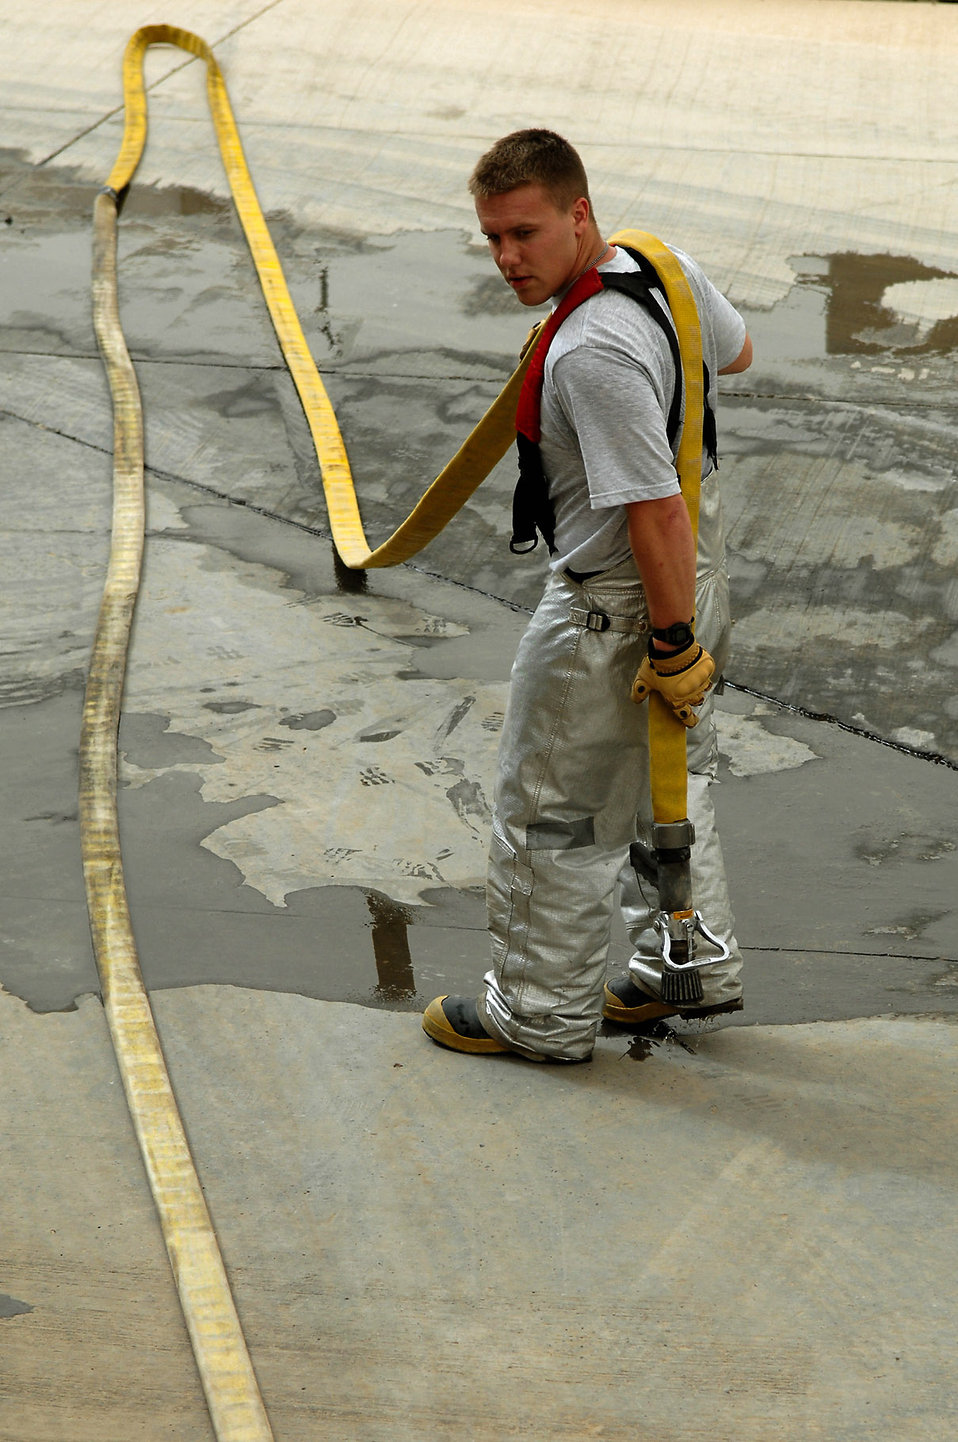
Firefighting is a joint venture

Airman 1st Class Adam Baumgardner wraps up a hose during advancement and pump training April 29 at Balad Air Base, Iraq. Training on a daily basis helps firefighters stay mission ready for emergency situations. Airman Baumgardner is a 332nd Expeditionary Civil Engineer Squadron firefighter deployed from Malmstrom Air Force Base, Mont.